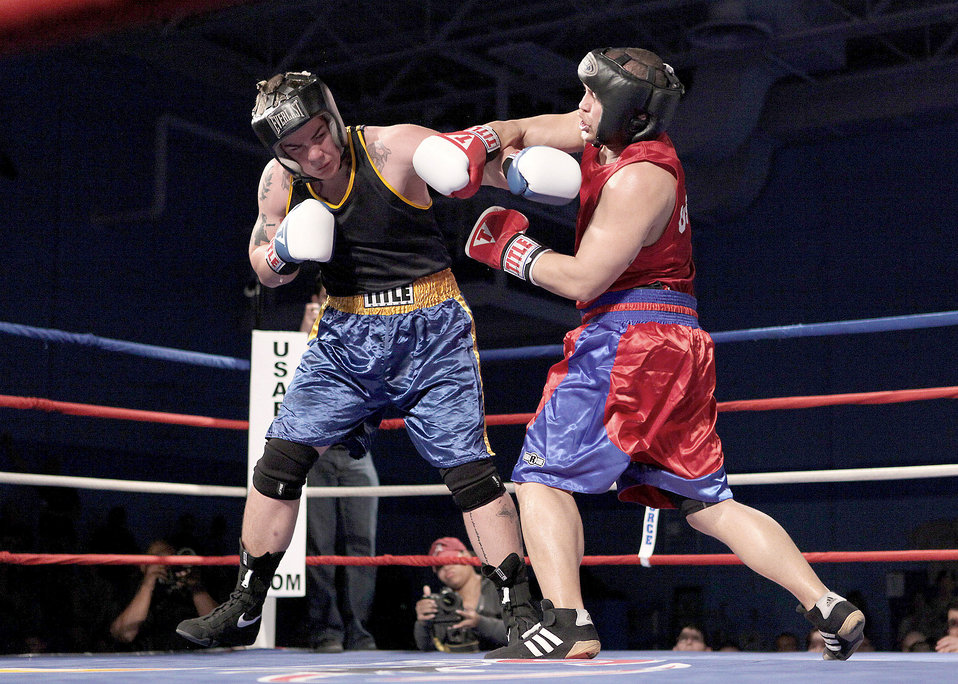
Armed Forces Boxing Championships

Senior Airman Kent Brinson (right) defeated Navy Information Technician Sean Hedgeman 28-5, during their Armed Forces Boxing Championships bout Feb. 15 , 2011, at Lackland Air Force Base, Texas.